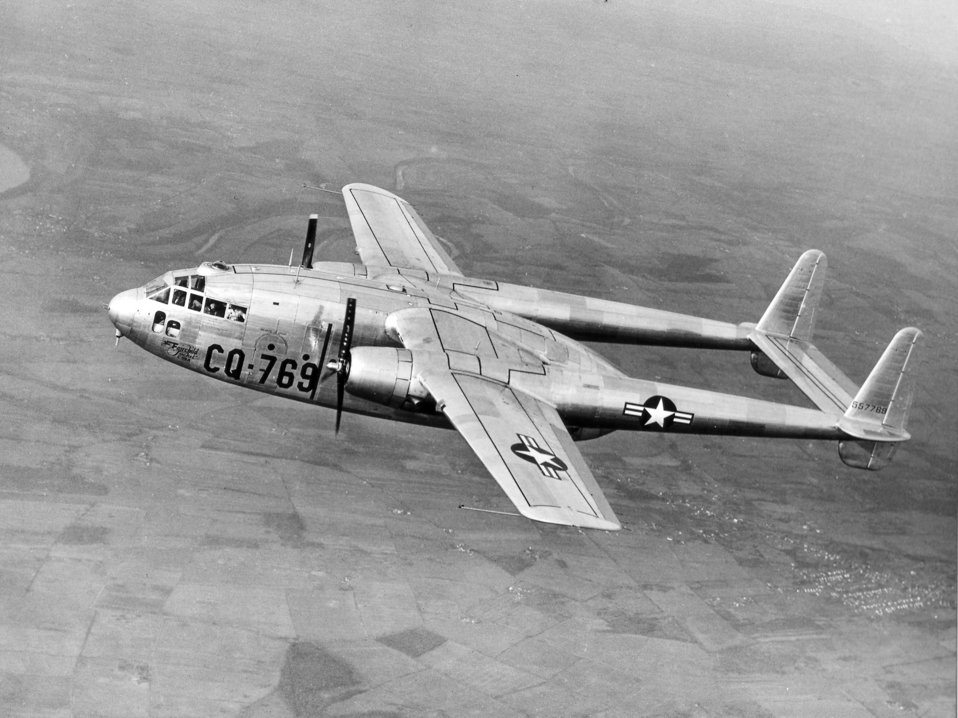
C-119A

1940'S -- C-119A